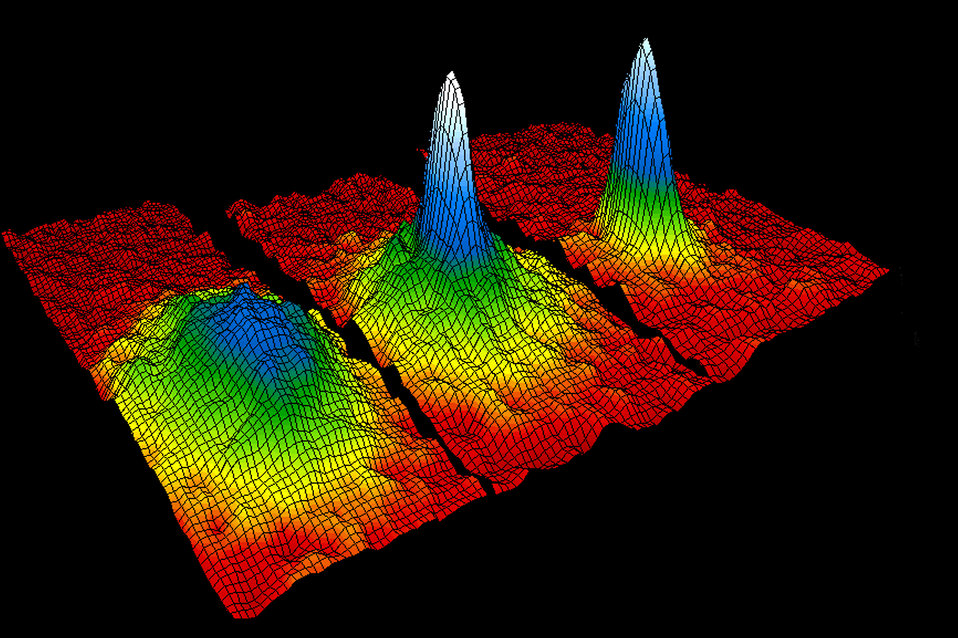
Quantum Physics; Bose Einstein condensate

In the July 14, 1995 issue of Science magazine, researchers from JILA reported achieving a temperature far lower than had ever been produced before and creating an entirely new state of matter predicted decades ago by Albert Einstein and Indian physicist Satyendra Nath Bose. Cooling rubidium atoms to less than 170 billionths of a degree above absolute zero caused the individual atoms to condense into a 'superatom' behaving as a single entity. The graphic shows three-dimensional successive snap shots in time in which the atoms condensed from less dense red, yellow and green areas into very dense blue to white areas. JILA is jointly operated by NIST and the University of Colorado at Boulder.